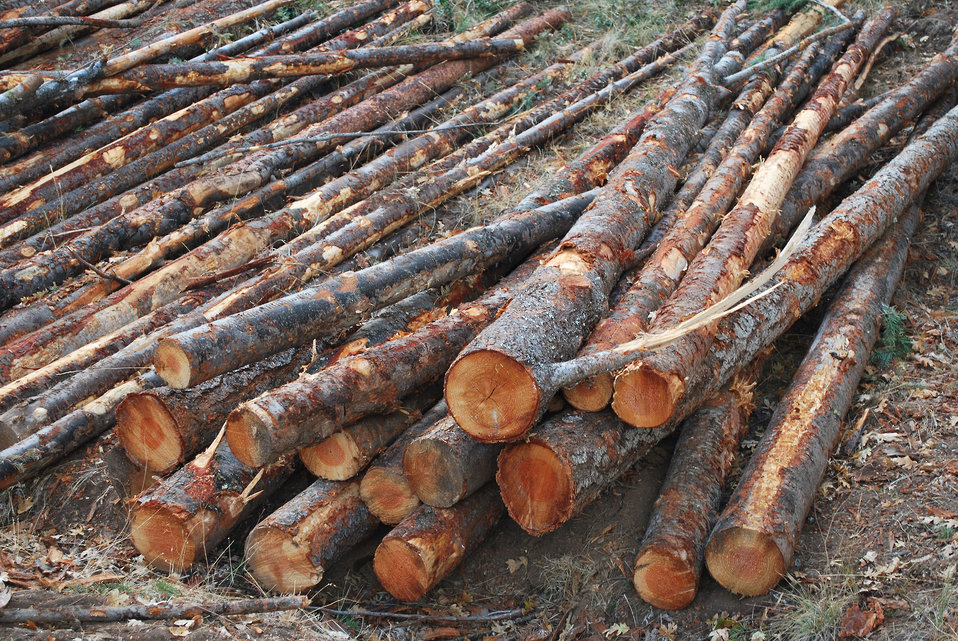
Conifer Removal, Colestin Valley